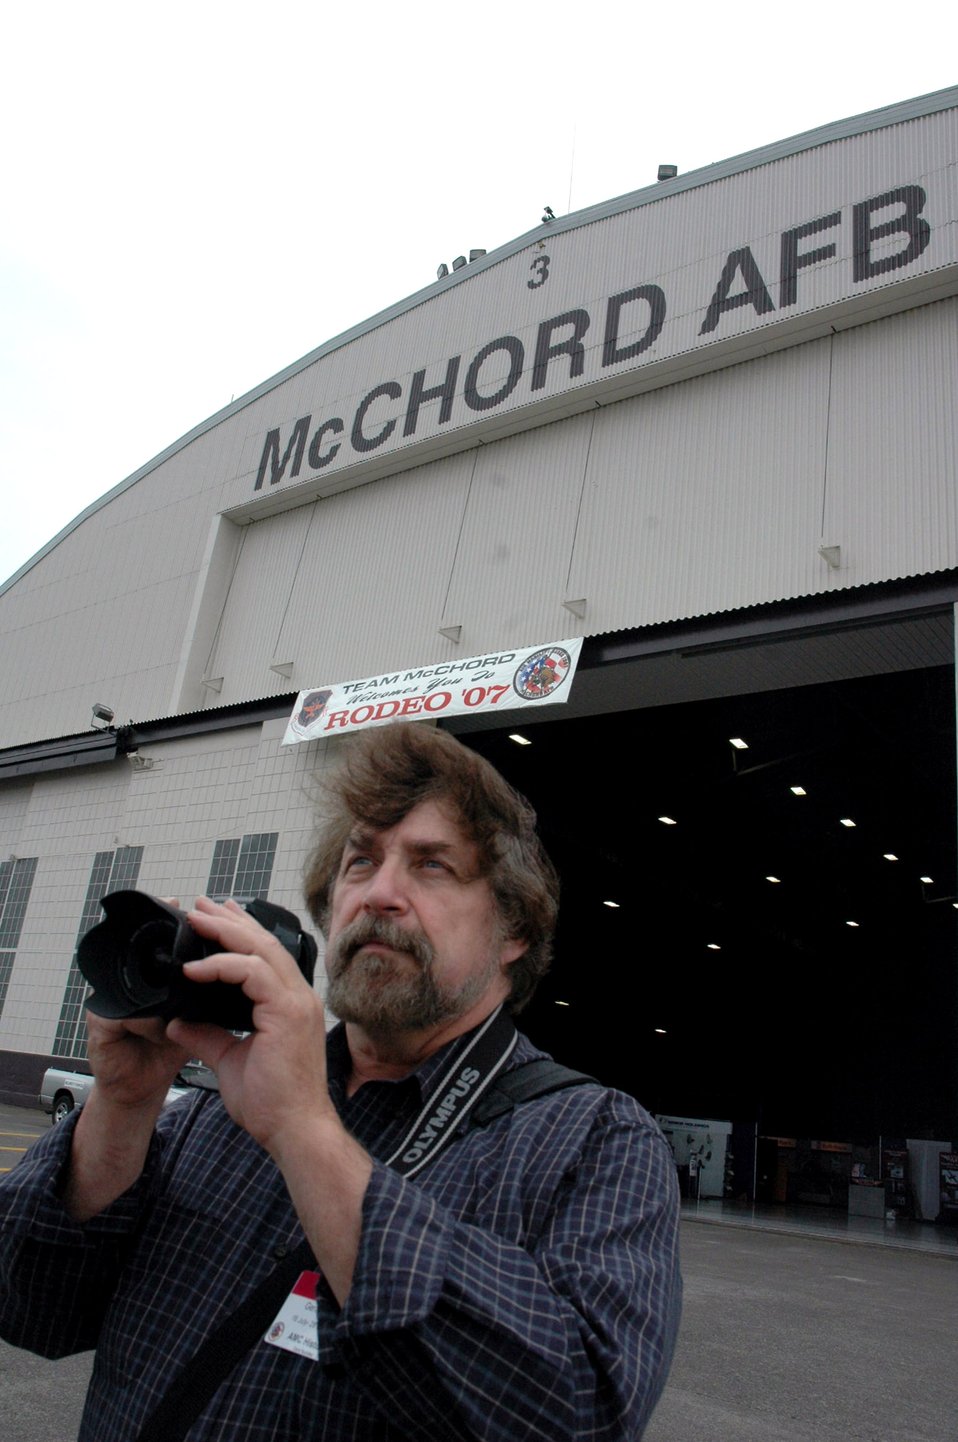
Artists document Rodeo competition

Jerry Moore takes a photo of a KC-10 Extender from McGuire Air Force Base, N.J., during operations July 23 for Air Mobility Command's Rodeo 2007 at McChord AFB, Wash. Mr. Moore is an artist from Vancouver, Wash., and a member of the Air Force Art Program. He has been an artist for more than 50 years and works in illustrations with oils acrylics. He is one of four artists in the Air Force Art Program to visit Rodeo 2007 for future art works for the Air Force.